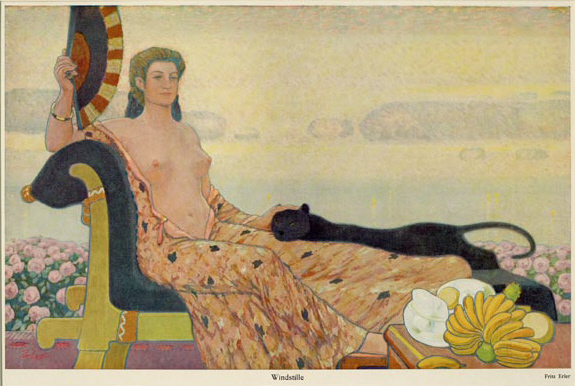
Lithographie, in: 'Jugend', 1896